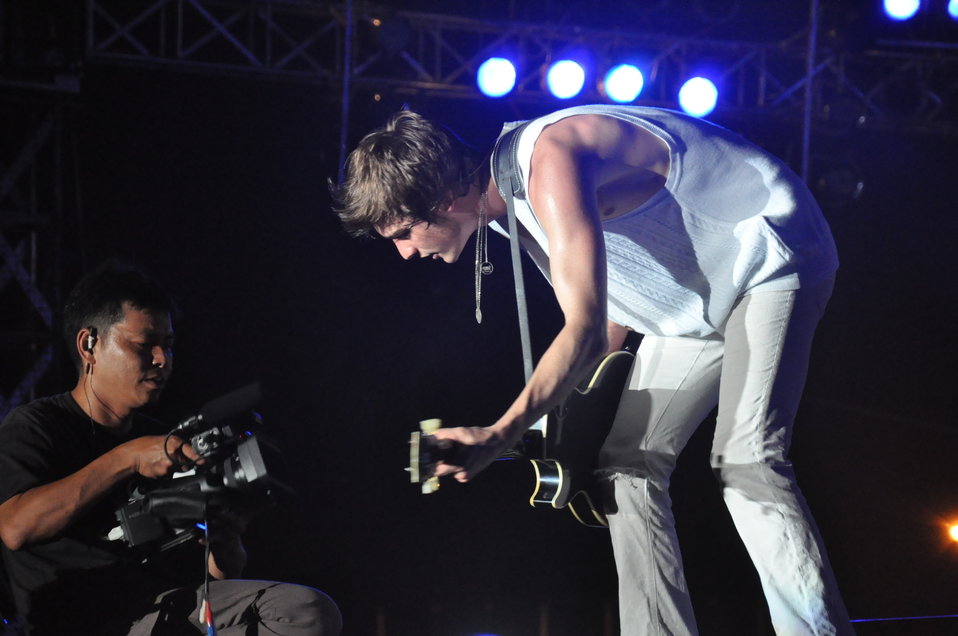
USAID MTV EXIT HCMC Concert

The Click Five performs a concert in Ho Chi Minh City against human trafficking, April 17, 2010